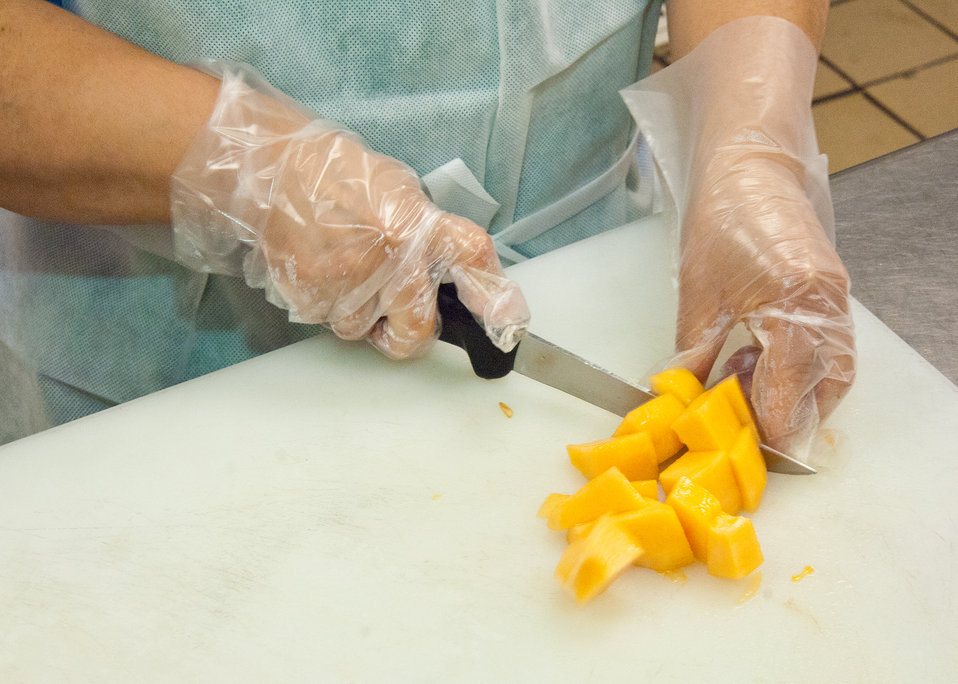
Magaly Valentin, Arlington Food Services prepares melon for fruit salads in the kitchen at Washington-Lee High School in Arlington, Virginia, on Wednesday, October 25, 2011. The National School Lunch Program is a federally assisted meal program administered by the United States Department of Agriculture, Food and Nutrition Service operating in public, nonprofit private schools and residential child care institutions. It provides nutritionally balanced, low-cost or free lunches to children each school day.